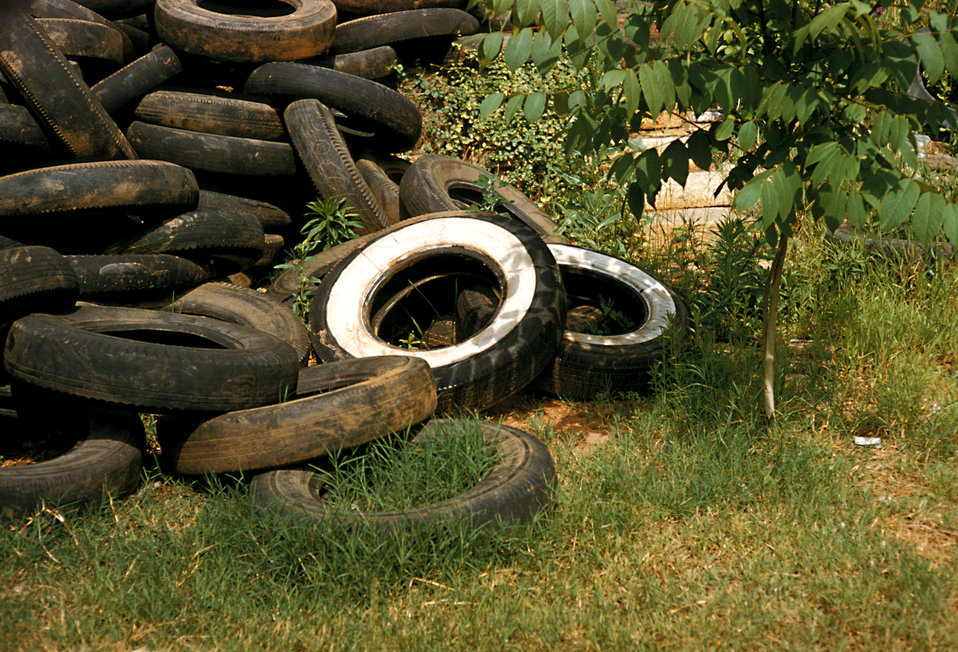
Domestic mosquitoes are often found breeding in old discarded tires.